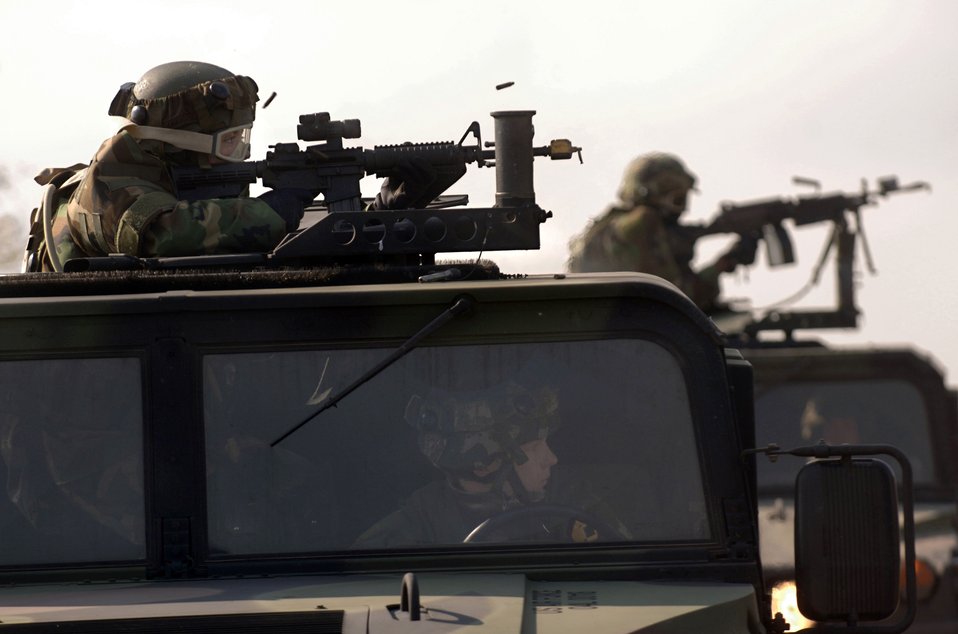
Creek Defender

Airman 1st Class Amanda Hines responds to